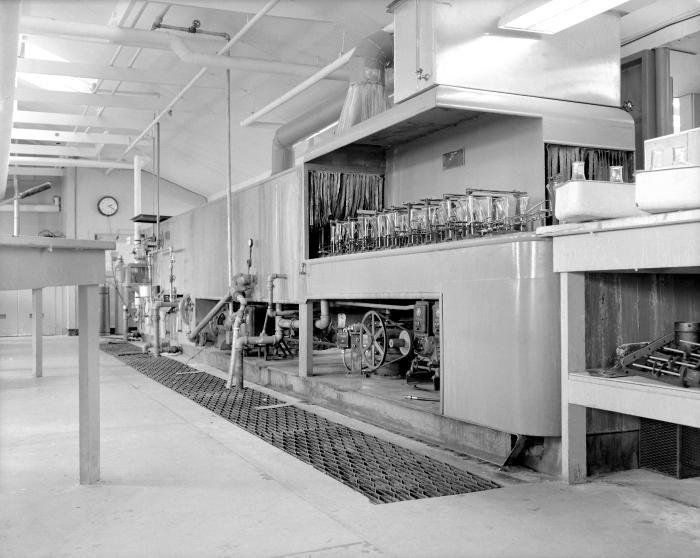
This 1957 photograph showed the interior of an animal facility while it was under construction at the organization's Lawson Facility location on its Chamblee, Georgia Campus.